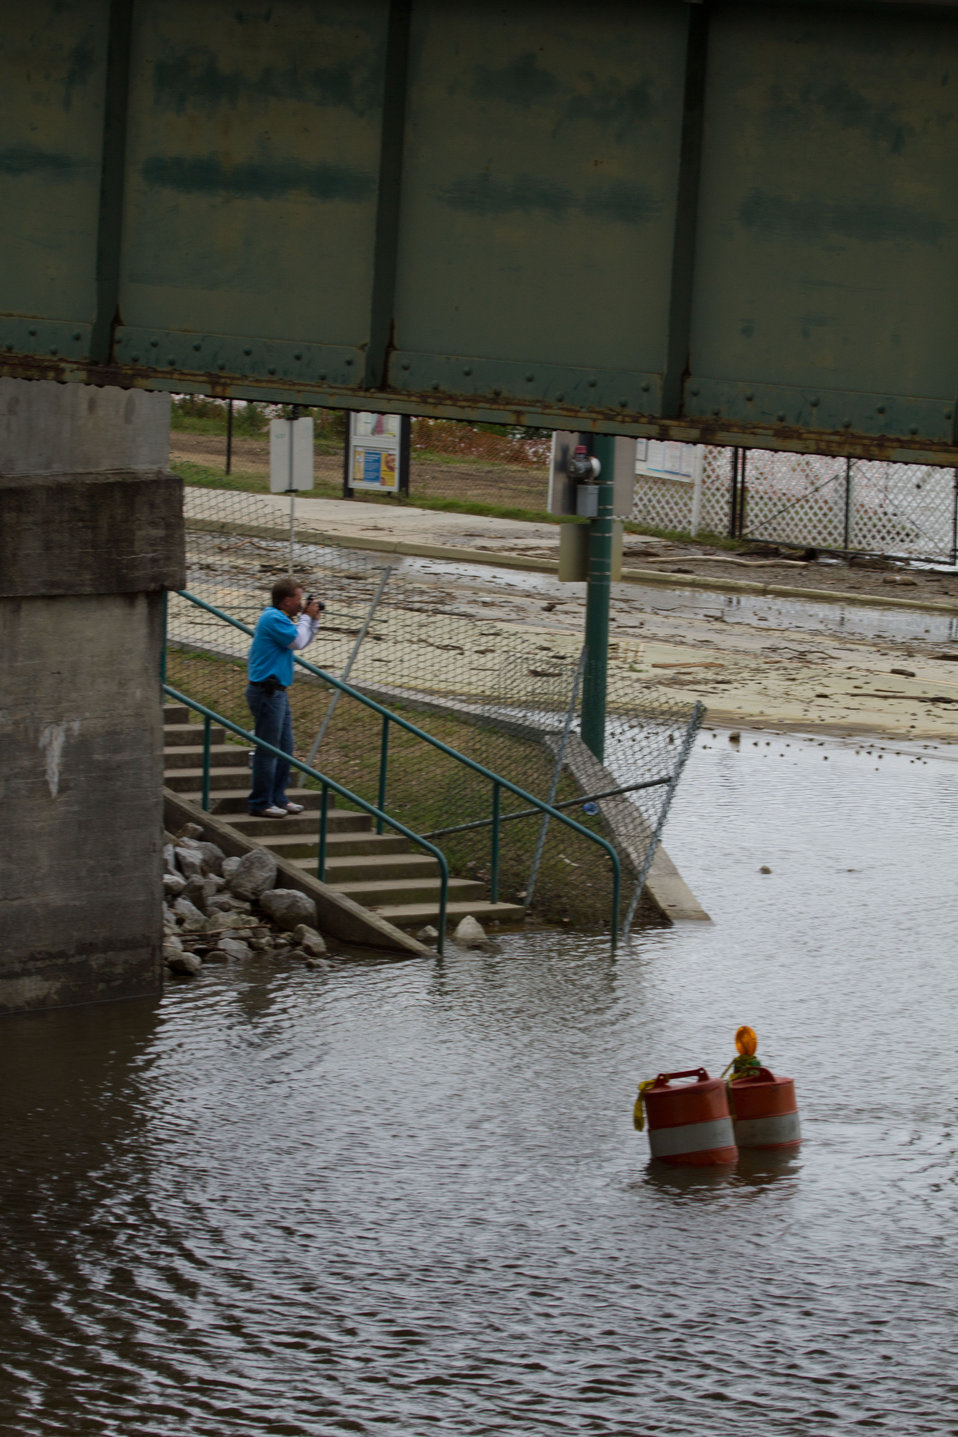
Beale Street in Memphis, TN, on Saturday, May 14. 2011, remains partially flooded, visitors are still coming to the waterfront to see the flood level, debris, and rocks on the historic Beale Street (seen flooded) in USDA Photos by Lance Cheung.